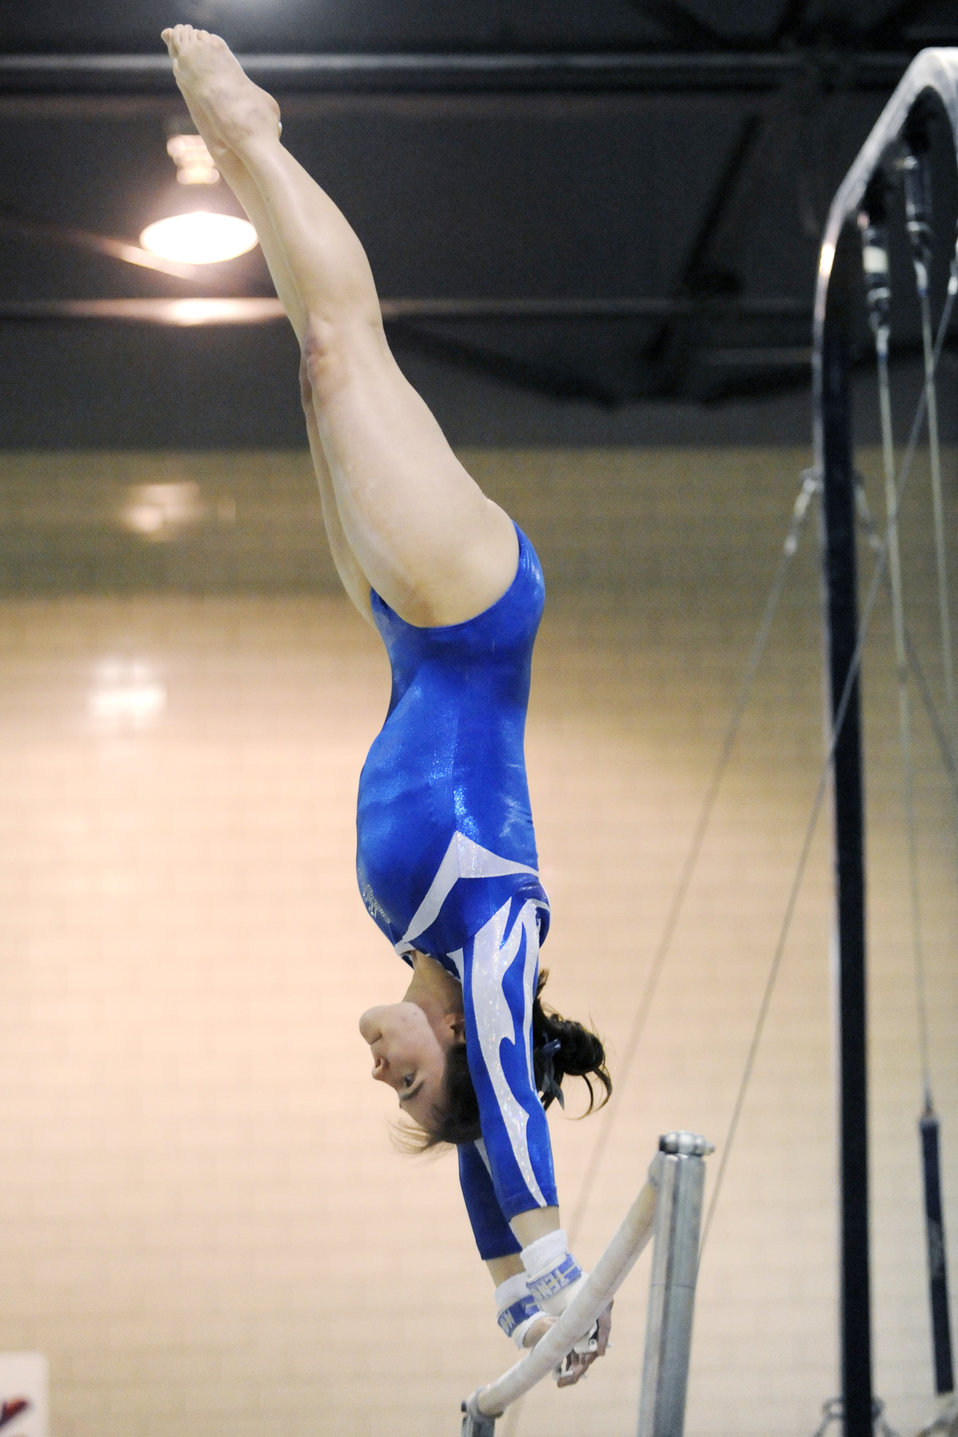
Falcon gymnasts compete against UC Davis

U.S. Air Force Academy sophomore Jenna Dudley holds a pose while competing on the uneven bars during Air Force's meet against University of California Davis Jan. 30, 2010, in the Cadet Gymnasium in Colorado. Air Force lost the meet 191.575 to 185.300 despite two event titles. Dudley took the title in the floor exercise with a tally of 9.775, and finished in the top five of every event. She placed second in the all-around with a score of 38.425.